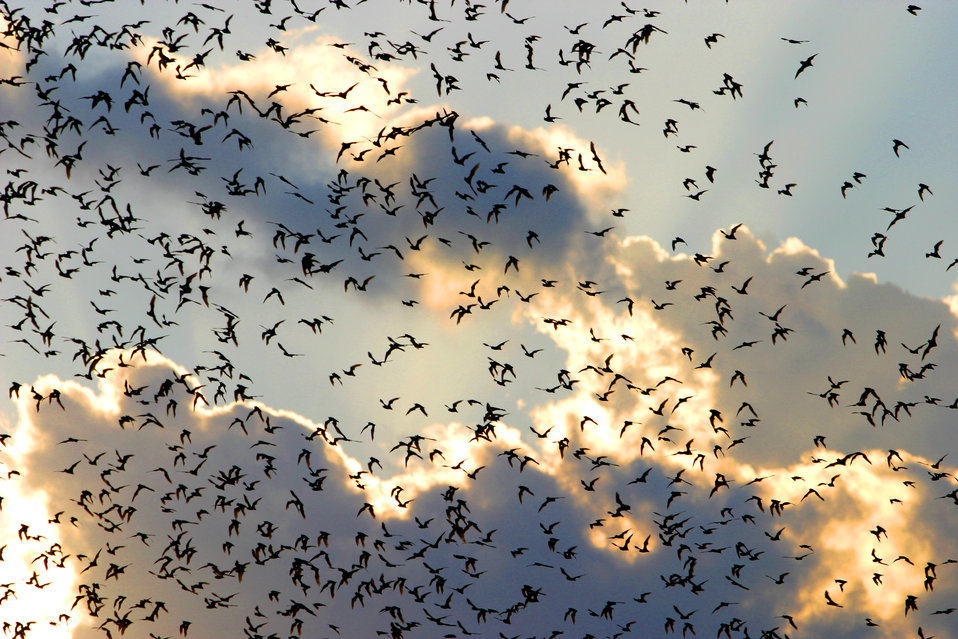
Bats in sunlit sky